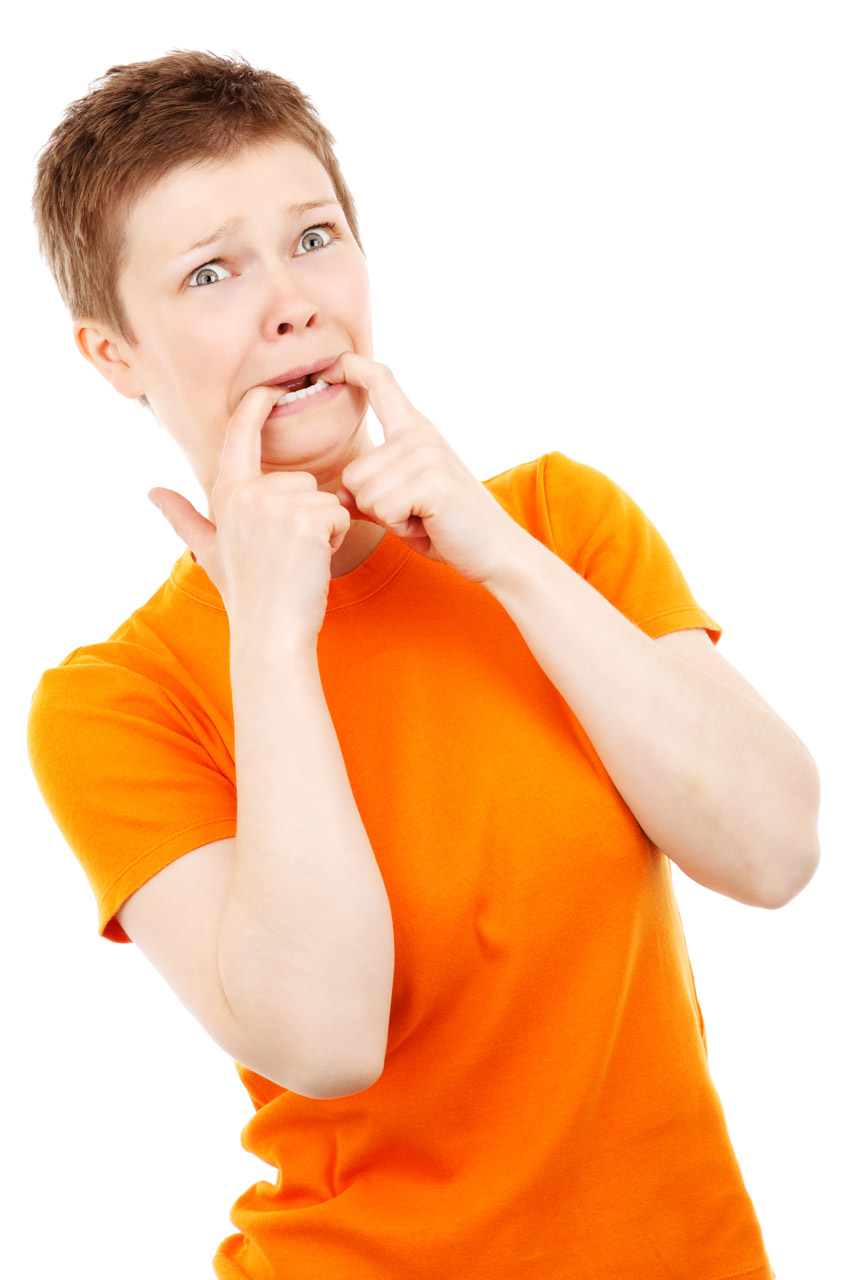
Scared lady

Young woman scared on white background - jana svojsova.